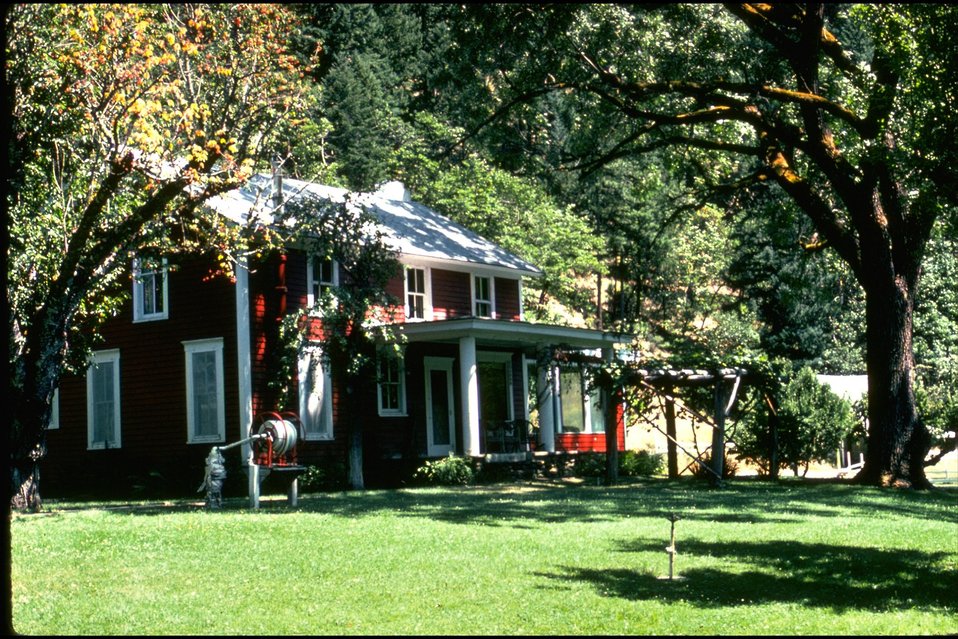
Rogue River Ranch - Main House/Museum, front view.